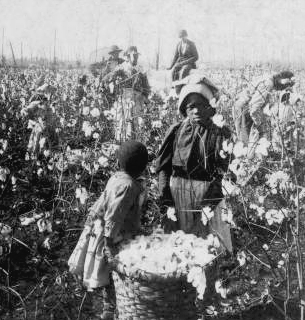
'We'se done all dis's Mornin'.' (Girls with bale of cotton in the field.), by Keystone View Company cleaned